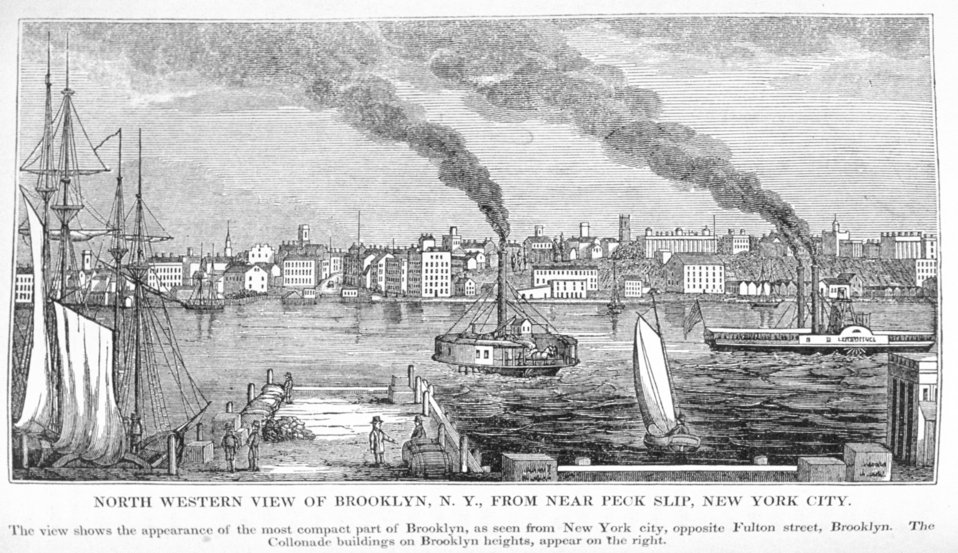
North Western View of Brooklyn, N.Y., from near Peck Slip, New York City.